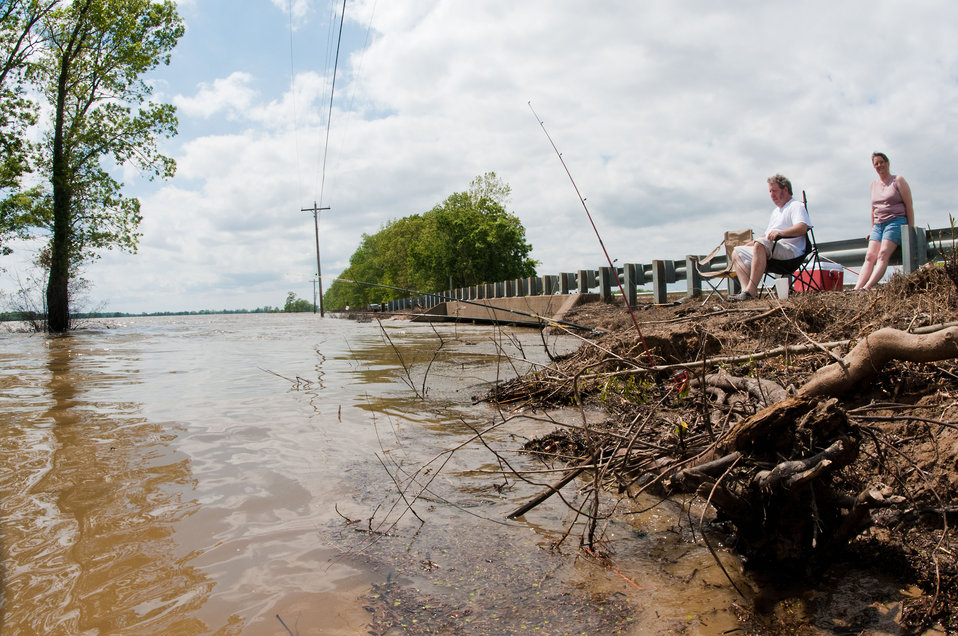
David and Nona Rodenhouser relax in folding chairs and try their luck fishing the flooded farmland off of highway 88 near Porter’s Gap Rd. that is several feet deep on Saturday, May 21, 2011.